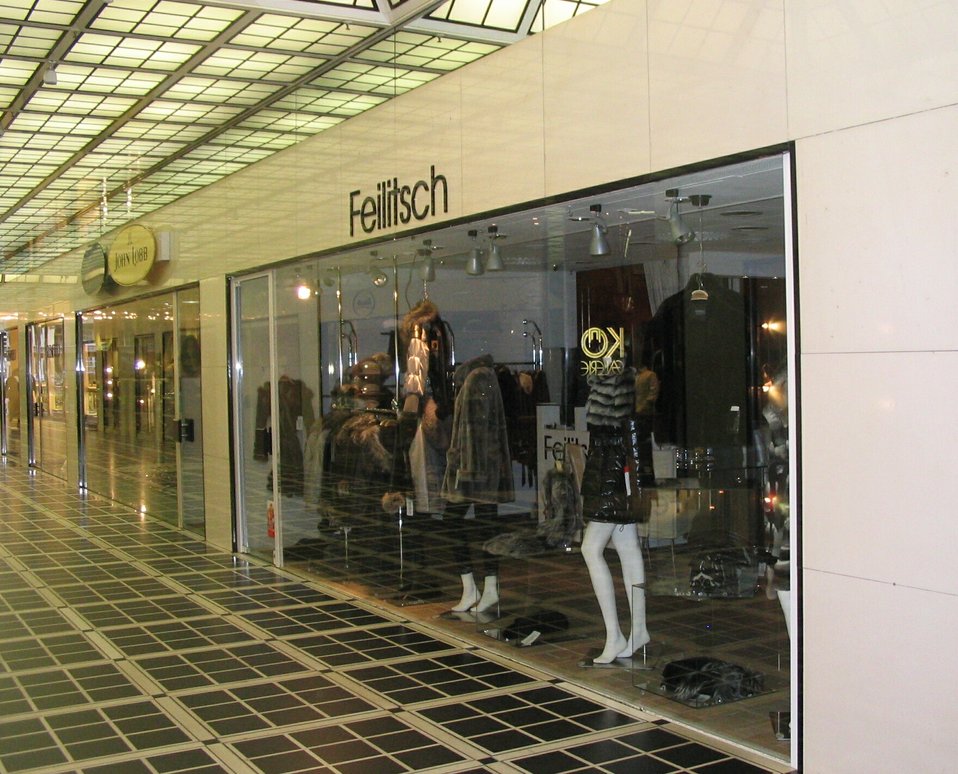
Deutsch: Feilitsch GmbH, Pelzgeschäft in Düsseldorf, Königsallee 58 (Kö-Galerie)